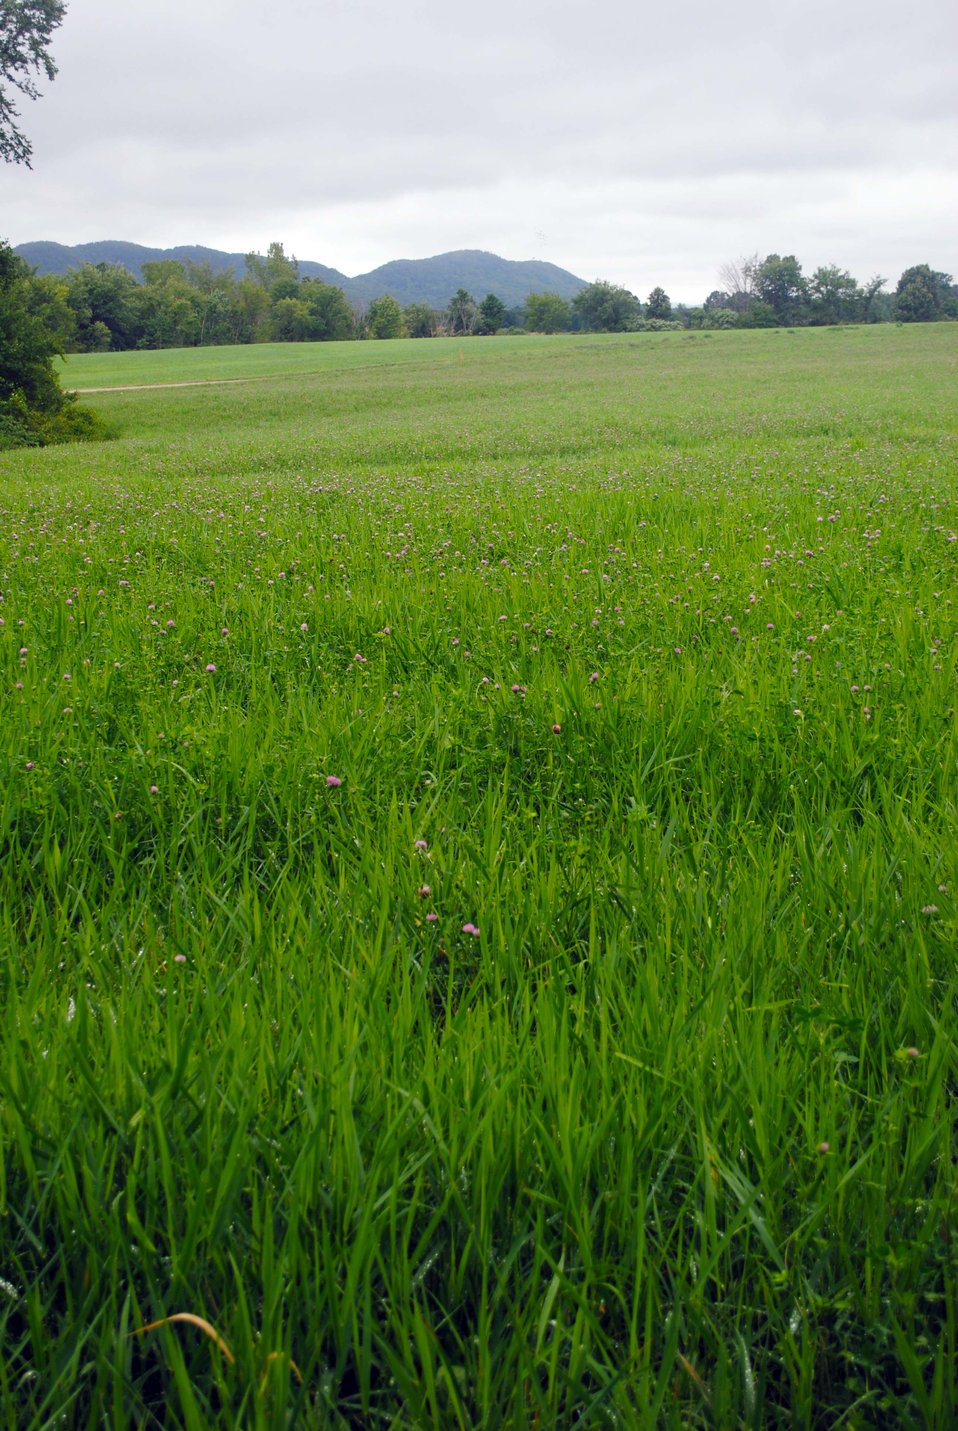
Holyoke Range

The Holyoke Range behind a field of clover at the Fort River Division of the Silvio O. Conte National Wildlife Refuge, Hadley, MA.